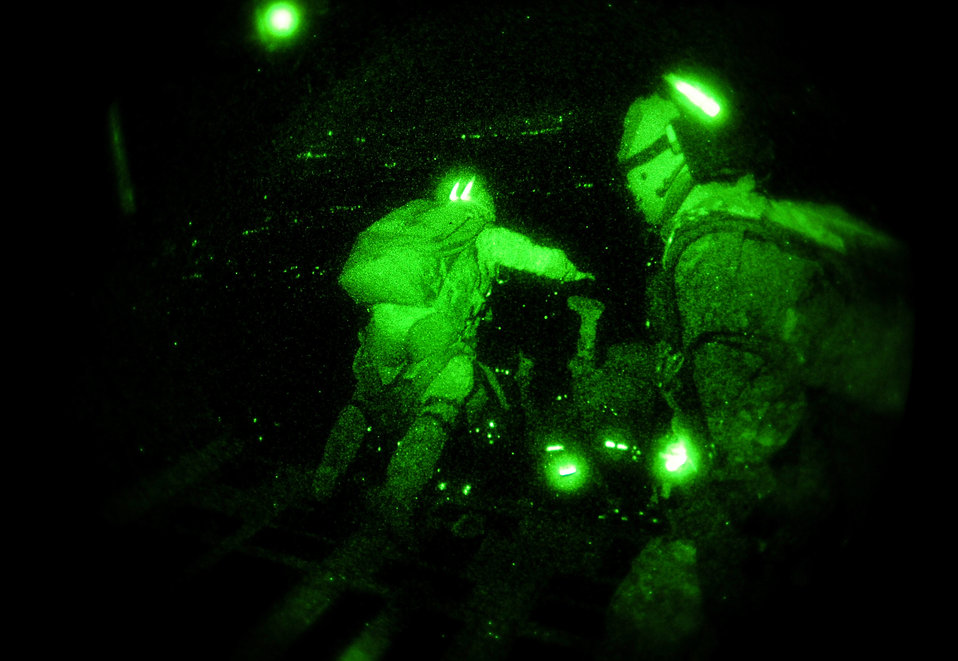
Special Tactics Airmen jump at night

Airmen from the U.S. Air Force Special Tactics Training Squadron jump on a high altitude, low opening or HALO, mission near Fort Walton Beach, Fla., March 16, 2010, during Exercise Emerald Warrior 2010. Emerald Warrior is a 19-day joint training exercise, which provided participants with realistic urban-warfare training scenarios at multiple sites along Florida's Gulf Coast.